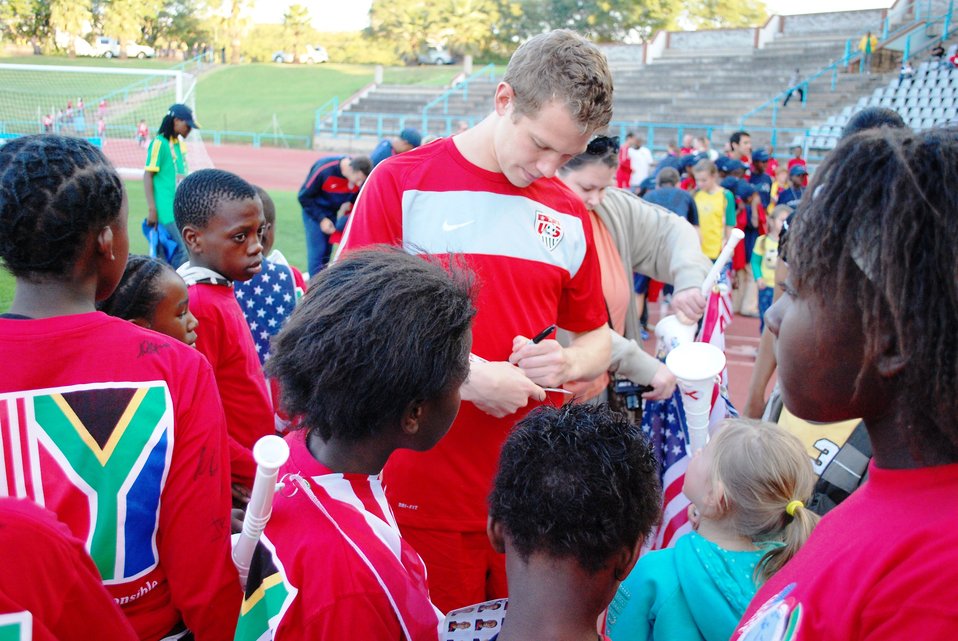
Jonathan Specter Signs Autographs

Jonathan Spector signs autographs at the U.S. National Soccer Team's open practice session with South African students and U.S. Mission to South Africa families at the Pliditch Stadium in Pretoria, South Africa, on June 6, 2010. The U.S. National Soccer Team is preparing for the 2010 World Cup in South Africa.